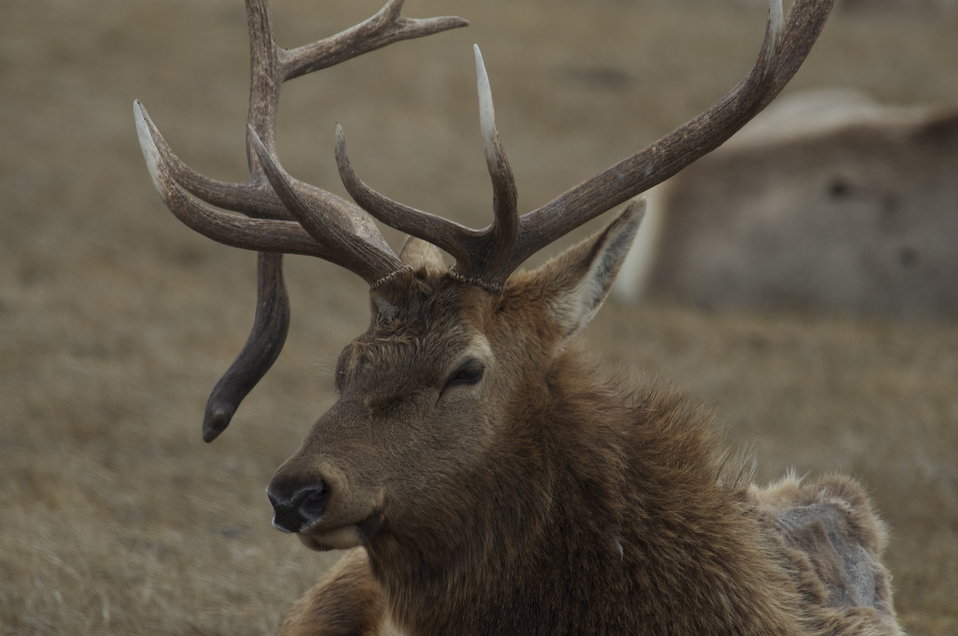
Drop Tine

A drop tine makes this bull stand out from the crowd.

Credit: USFWS / Mike Nordell, winter naturalist